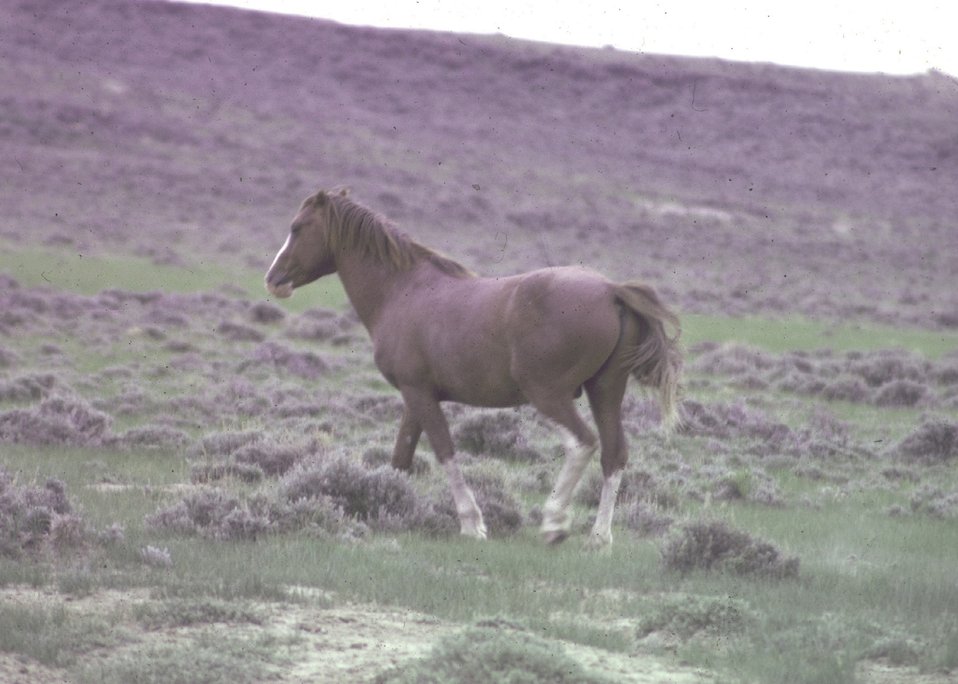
Single wild horse on public lands in Wyoming.